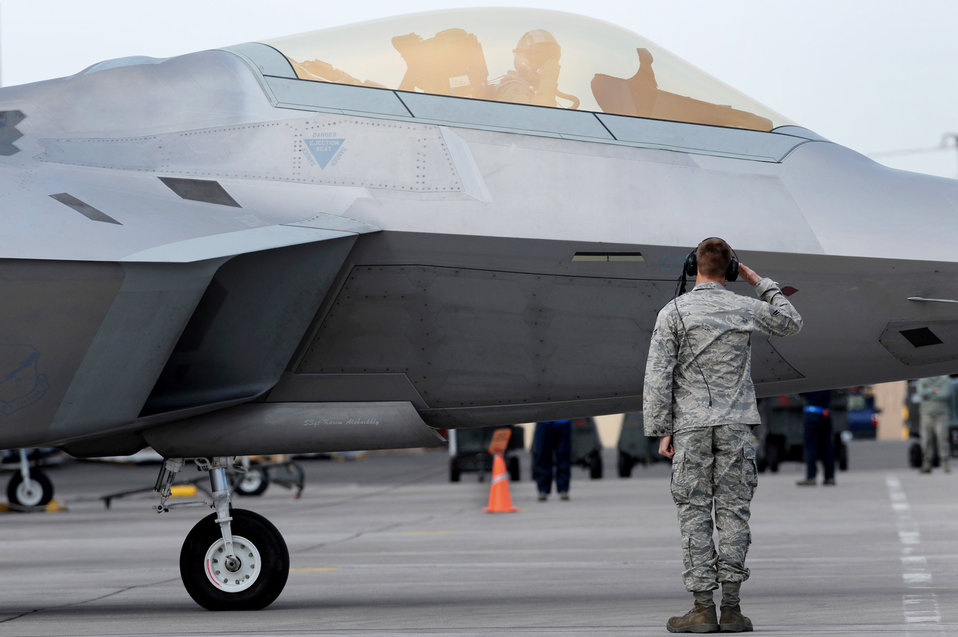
Raptors reign at Red Flag

Airman 1st Class Justin Horne salutes an F-22 Raptor pilot Feb. 4, 2010, during a Red Flag training exercise at Nellis Air Force Base, Nev. Red Flag is a realistic combat training exercise involving the air forces of the United States and its allies, and conducted on the 15,000-square-mile Nevada Test and Training Range north of Las Vegas. Airman Horne is assigned to the 49th Aircraft Maintenance Squadron at Holloman AFB, N.M.